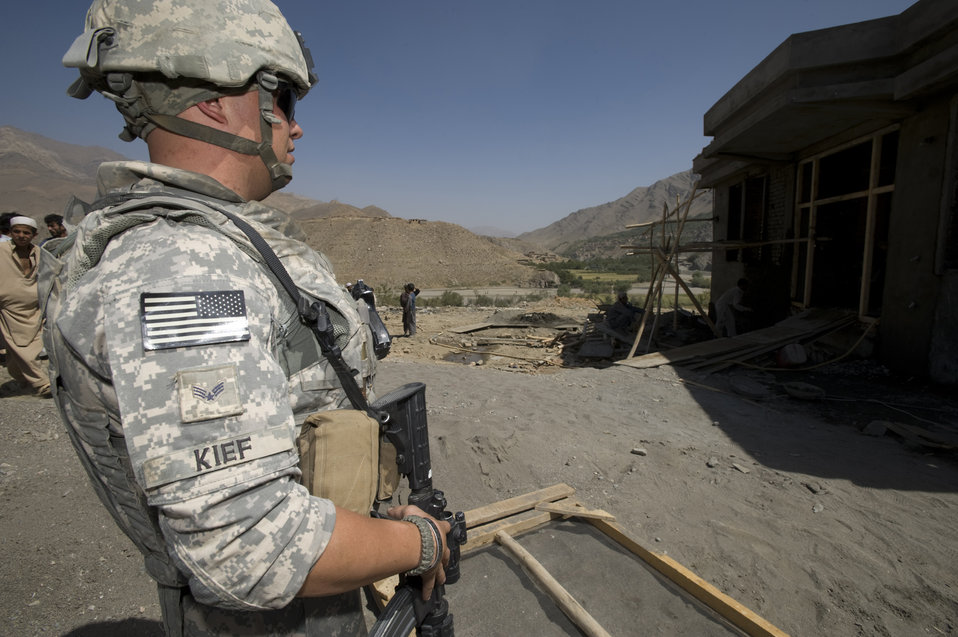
Operation Enduring Freedom

Senior Airman Andrew Kief examines the progress of construction on a new clinic in a small Afghanistan village recently. Airman Kief served as the convoy commander for this mission and was responsible for coordinating meeting times and setting up the missions agenda. Airman Kief is a Kapisa and Parwan Provincial Reconstruction Team security forces member.